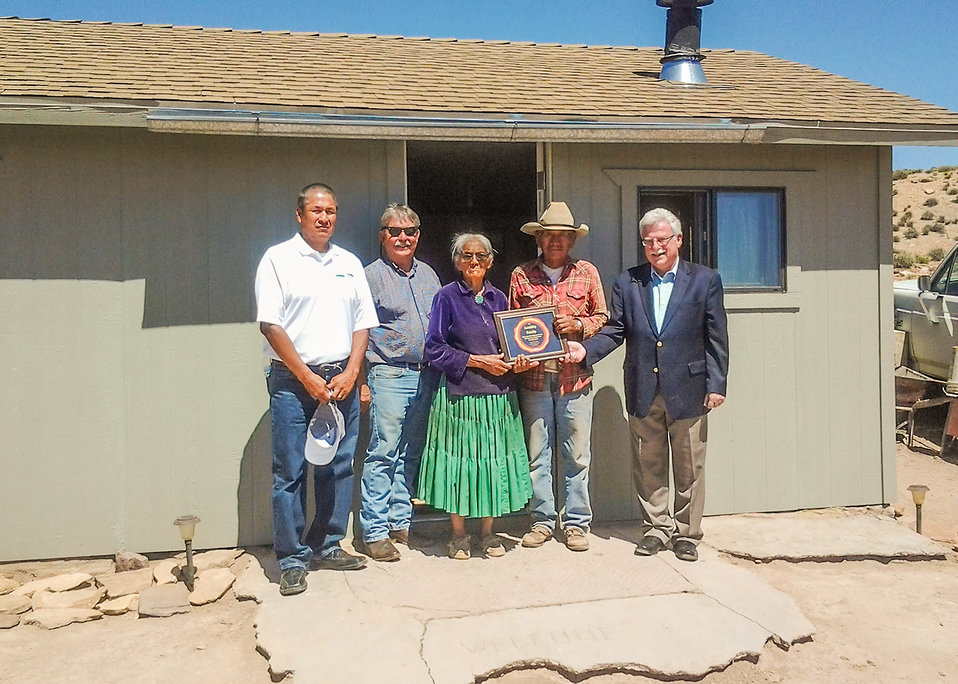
Navajo Native Americans Betty and Kee Acothley hold the 2013 Homeownership Month commendation presented to them by the U.S. Department of Agriculture’s (USDA) Rural Development (RD) agency at their home in the former Bennett Freeze area of Arizona. (L to R Area Director Freddie Hatathlie, Grand Canyon Trust Director Roger Clark, Navajo Native Americans Betty and Kee Acothley and U.S. Department of Agriculture (USDA) Rural Development (RD) Arizona State Director Alan Stephens).